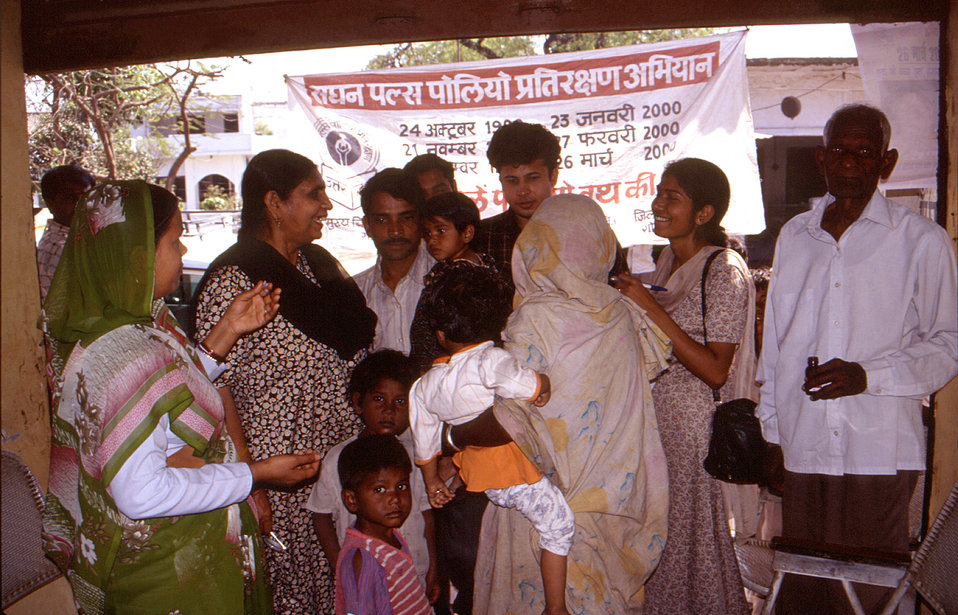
In this 2000 photograph, polio eradication team members were in the process of interviewing Indian mothers about their children's health history, and whether or not they'd received a prior polio vaccine. This scene was captured during one of India's National Immunization Day (NID) celebrations.The image was provided by Chris Zahniser, B.S.N., R.N., M.P.H., a STOP Transmission of Polio (STOP) immunization initiative team member and photographer. Ms. Zahniser was at the time assigned to the state of Uttar Pradesh in northern India, and spent three months working in the Districts of Gorakhpur and Deoria.